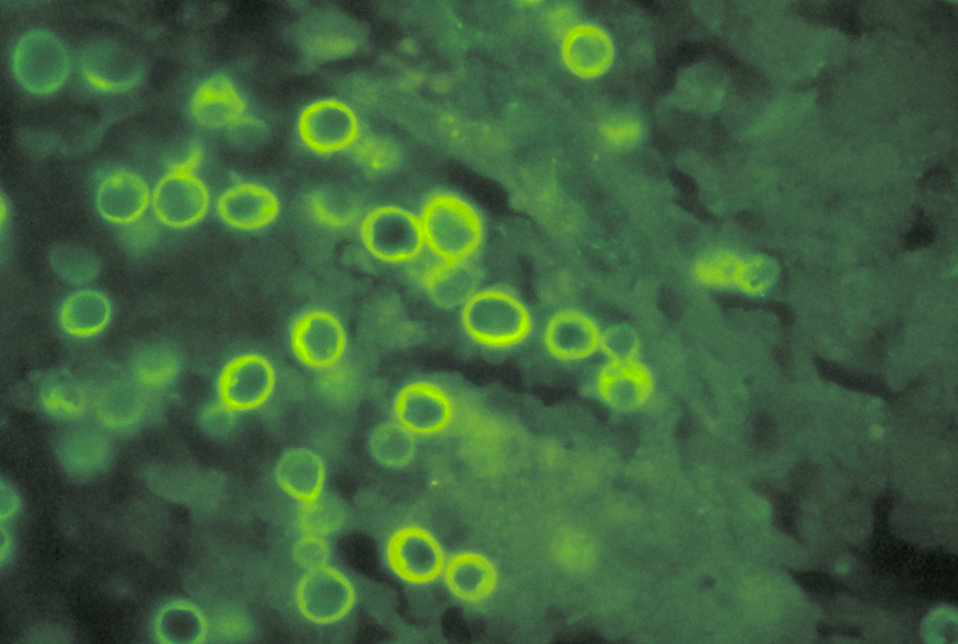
Direct FA stain revealing the histopathology of lung tissue blastomycosis due to the organism Blastomyces dermatitidis.